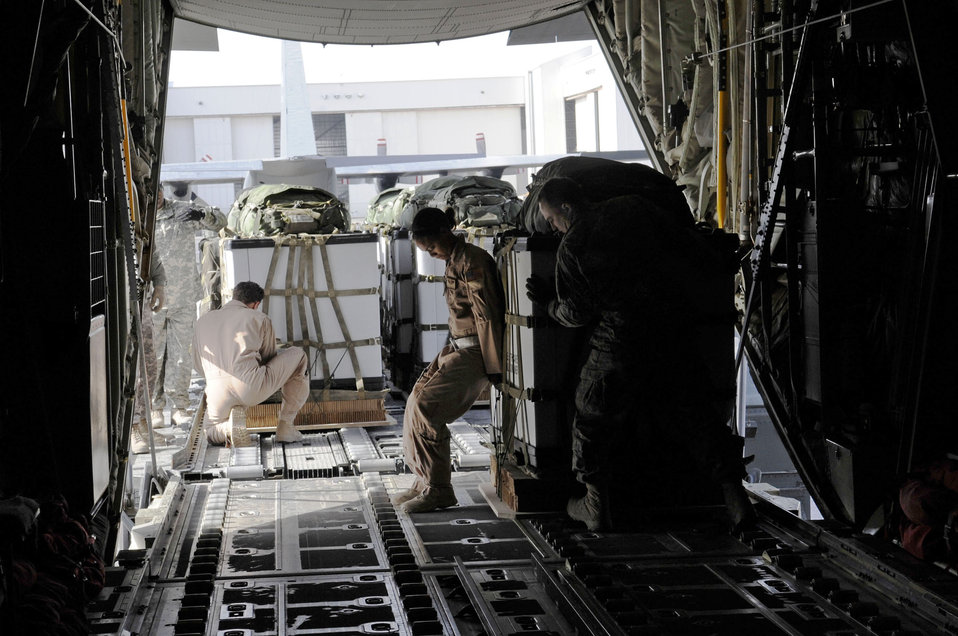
Kandahar Airmen airdrop supplies to troops, prepare for troop increase

Airmen and Soldiers upload containerized delivery systems onto a C-130J Super Hercules Jan. 29, 2010, at Kandahar Airfield, Afghanistan. The 82nd Airborne Corps' new rigging facility on Kandahar Airfield will allow Soldiers to build more CDS bundles filled with supplies needed to be airdropped to forward operating bases within Afghanistan.